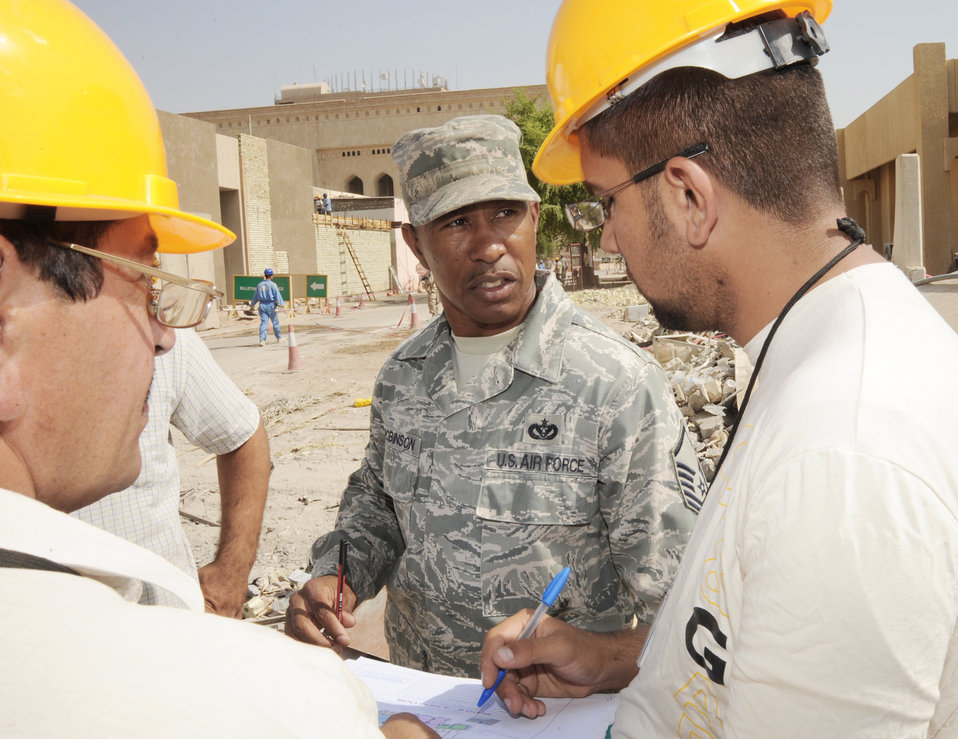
Servicemembers hammer out, nail down Iraqi construction

Master Sgt. Tommy Robinson coordinates with Iraqi contractors responsible for construction projects located in the International Zone Oct. 18, 2009, in Baghdad, Iraq. Sergeant Robinson is responsible for ensuring contractors follow contract agreements, safety rules and national electric codes. He is the joint area support group department of public works Team 2 NCO in charge deployed from Luke Air Force Base, Ariz. He is a native of Graceville, Fla.